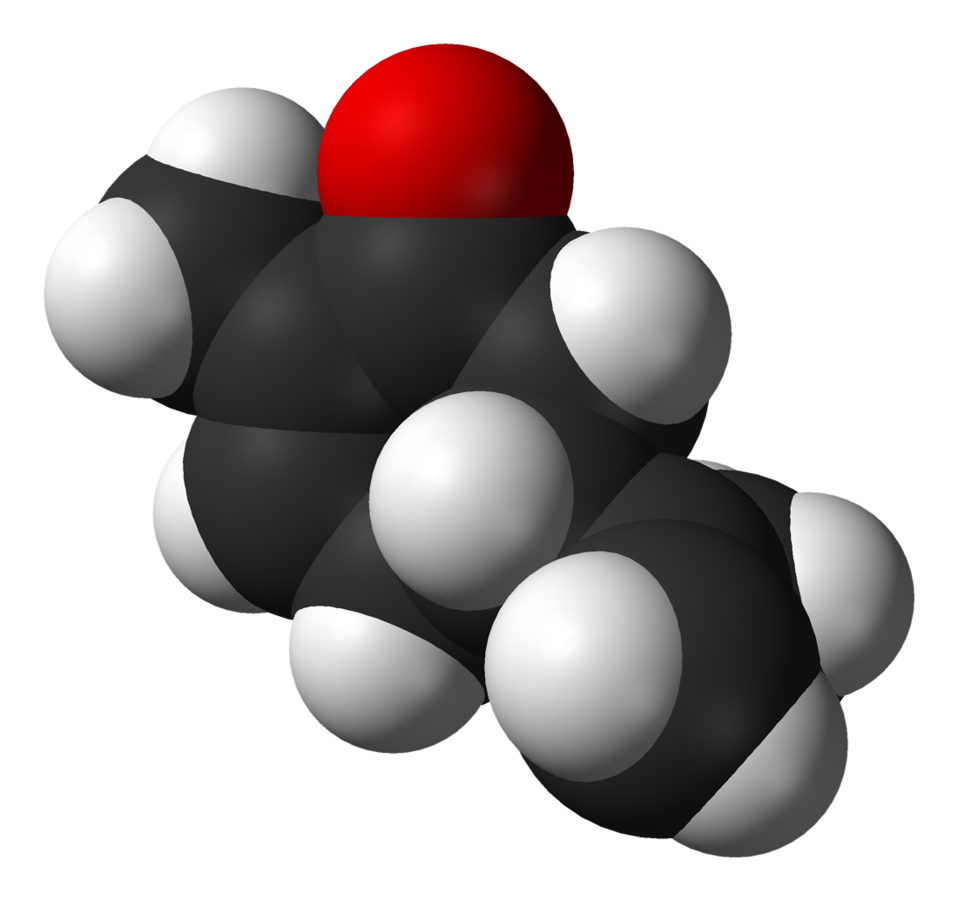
Space-filling model of the (R)-(−) enantiomer of carvone (AKA L-carvone), as found in the crystal structure. X-ray crystallographic data from Acta Cryst. (1997). B53, 702-707. Model constructed in CrystalMaker 8.1. Image generated in Accelrys DS Visualizer.